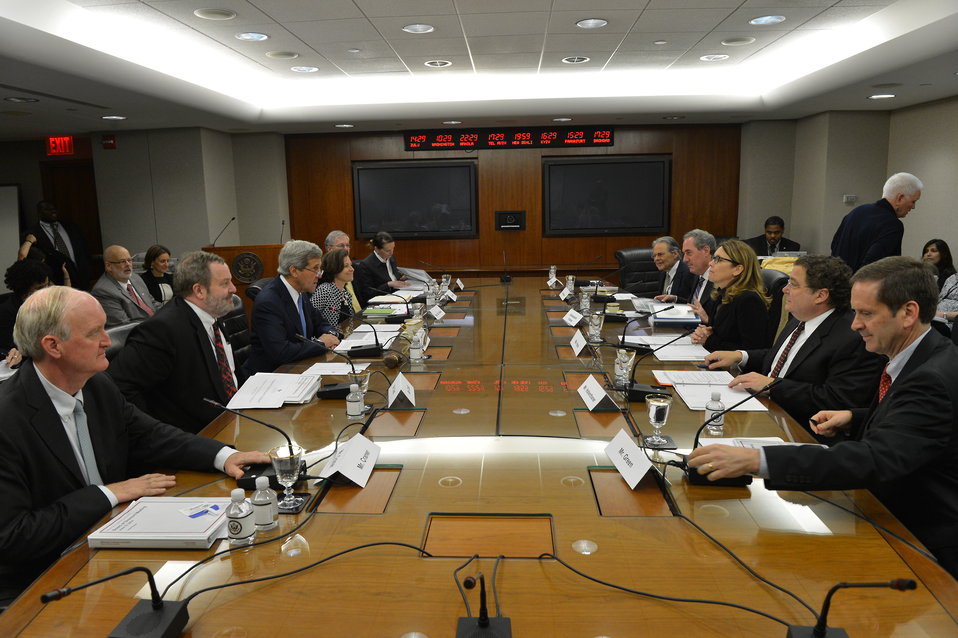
Secretary Kerry Chairs the Quarterly Millennium Challenge Corporation Meeting

U.S. Secretary of State John Kerry chairs the quarterly Millennium Challenge Corporation meeting, at the U.S. Department of State in Washington, D.C. on June 18, 2014.